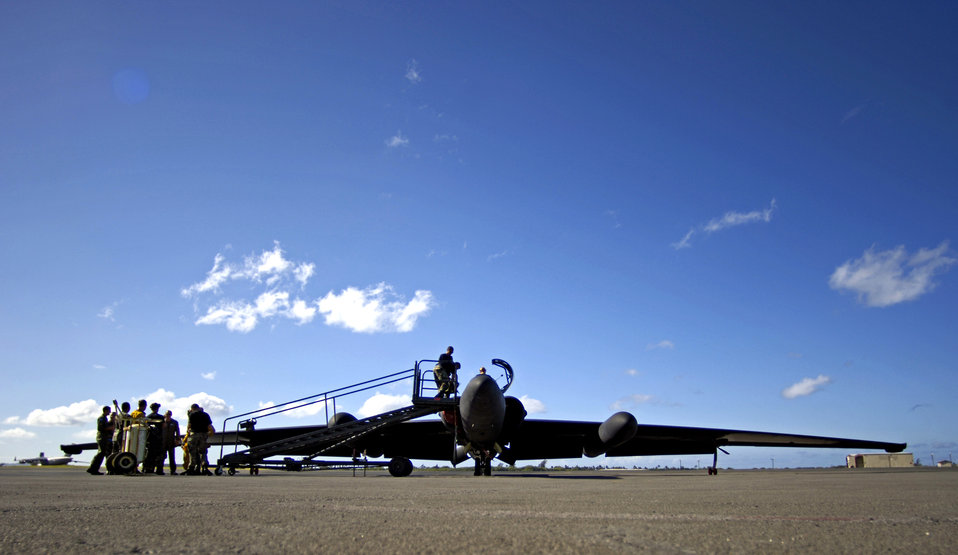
Dragon Lady face-lift

Airmen from the 9th Reconnaissance Wing at Beale Air Force Base, Calif., recover a U-2 Dragon Lady after it landed at Hickam AFB, Hawaii, on Tuesday, June 13. The aircraft is en route to South Korea. U-2s are undergoing a $1.5 billion upgrade. Cockpit instruments will be modernized with full-color displays that replace gauges and dials with state-of-the-art, touch-screen technology.